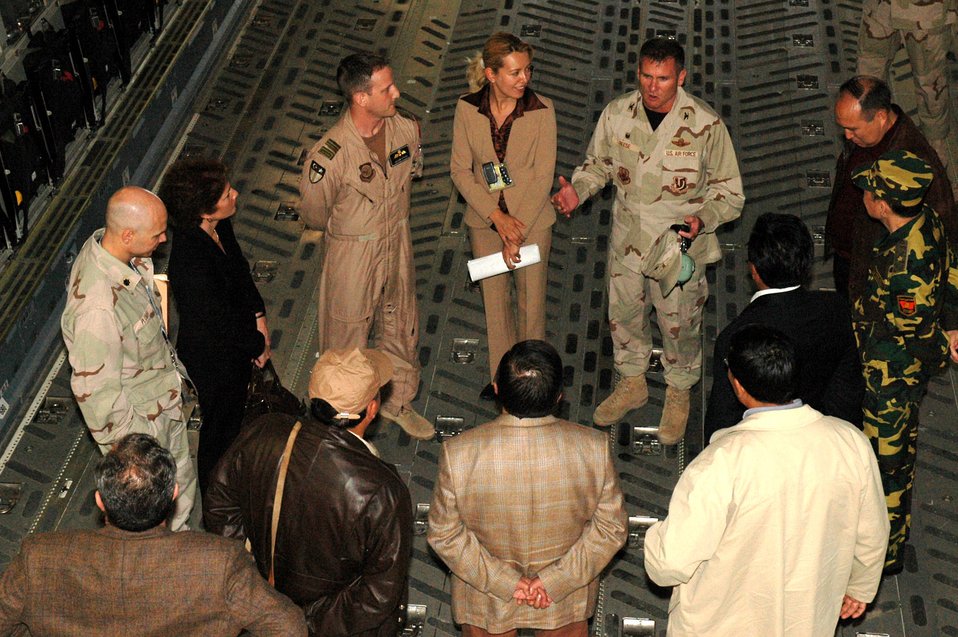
Kyrgyz government leaders experience Manas mission

Col. Scott Reese explains the capabilities and mission requirements of the C-17 Globemaster III to Kyrgyz Republic government leaders during a tour of the aircraft prior to a May 19 orientation flight at Manas Air Base, Kyrgyzstan. The mission of the 376th Air Expeditionary Wing is to deliver passengers, fuel and cargo into and out of Afghanistan in support of Operation Enduring Freedom. Colonel Reese is the 376th AEW commander.